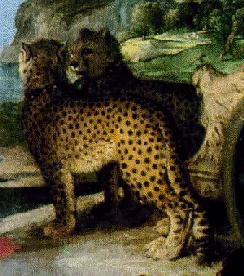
Bacchus & Ariadne (detail)